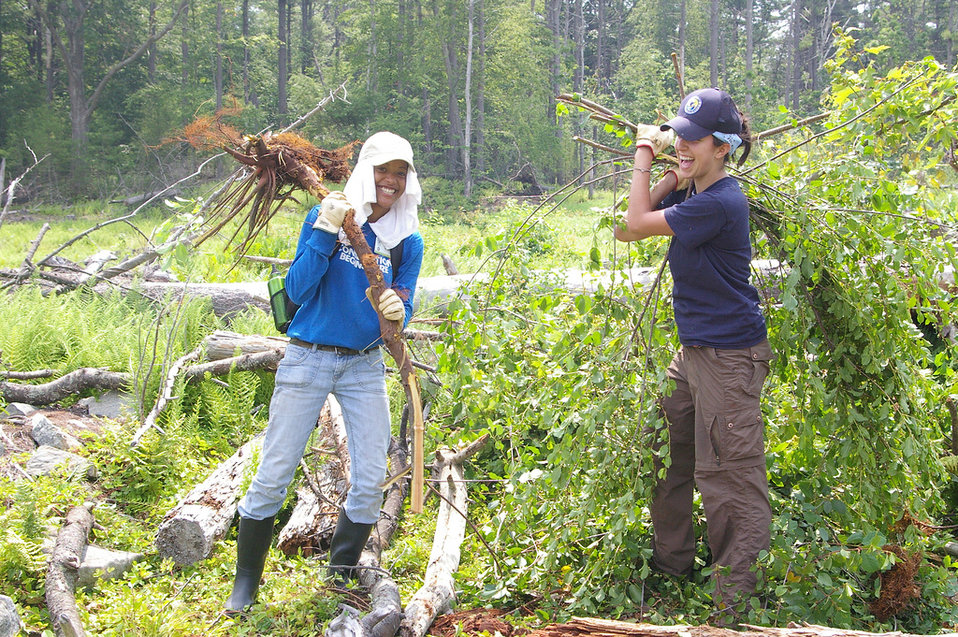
Pulling invasive species

U.S. Fish and Wildlife Service